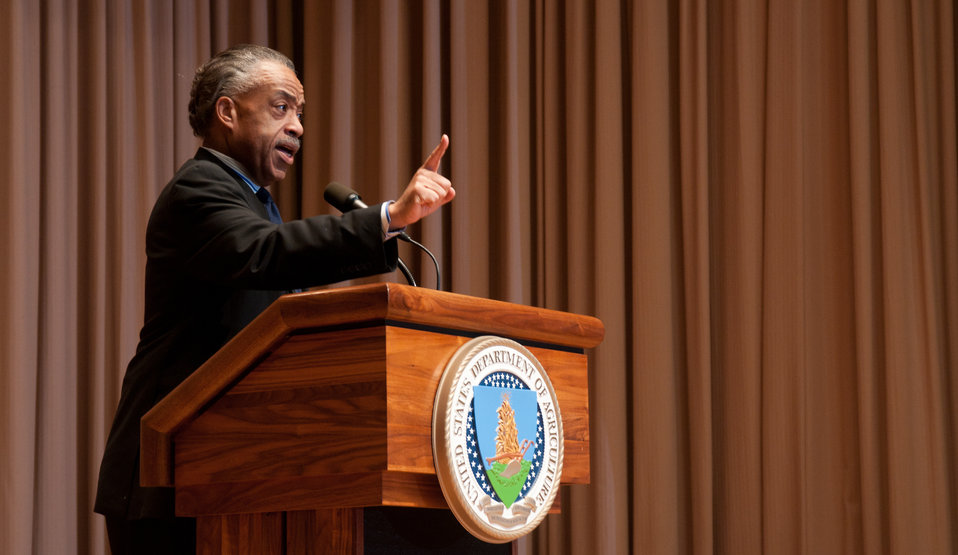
Reverend Al Sharpton, Jr. was the keynote speaker at the Department of Agriculture’s African American History Month Program, on Monday, February 28, 2011 in Washington, D.C. Rev. Sharpton’s topic was “Civil Rights in the Age of Obama.”